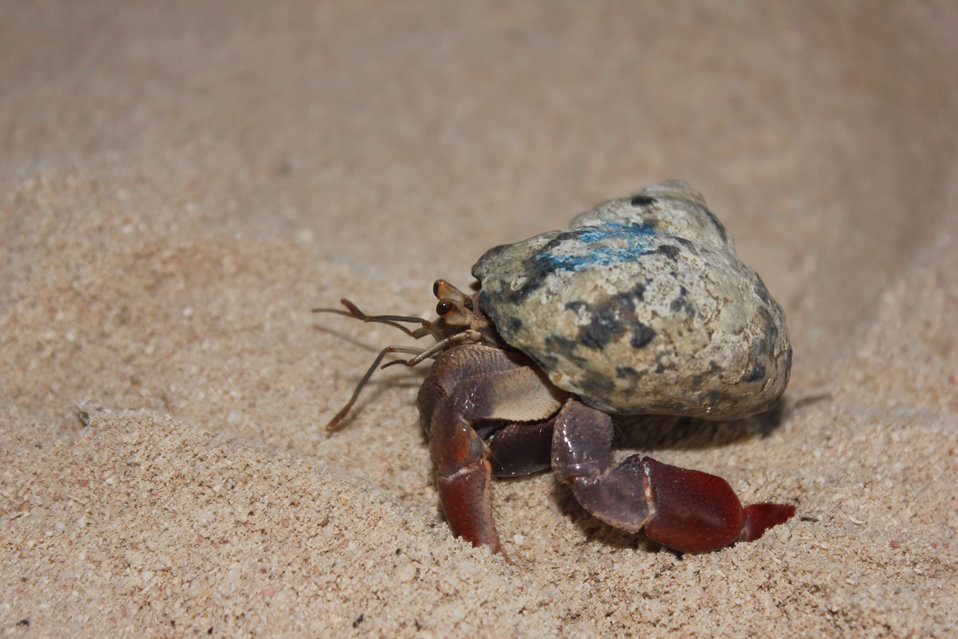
Crab

Racing crab.